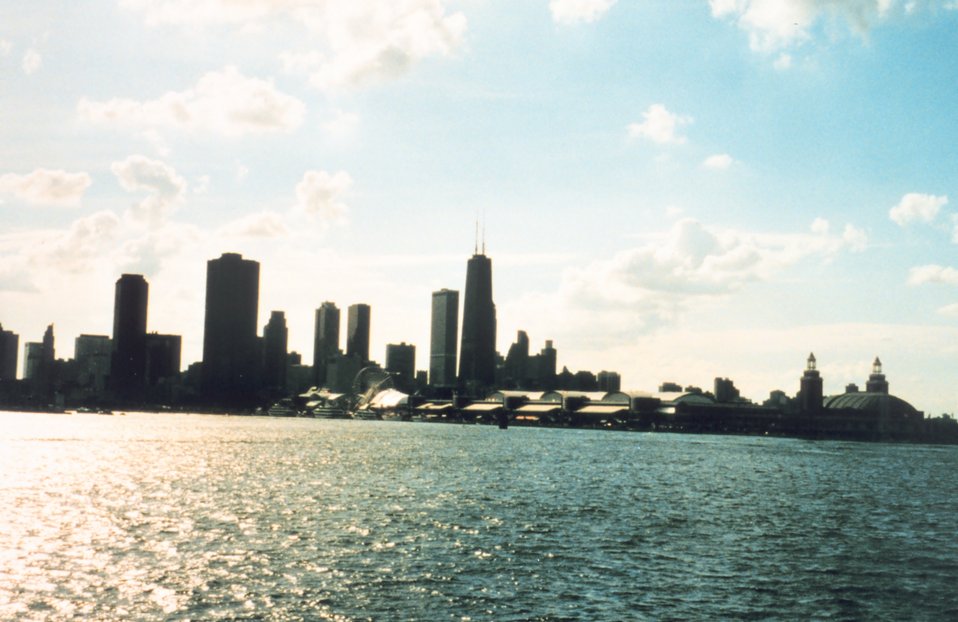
Lake Michigan waterfront